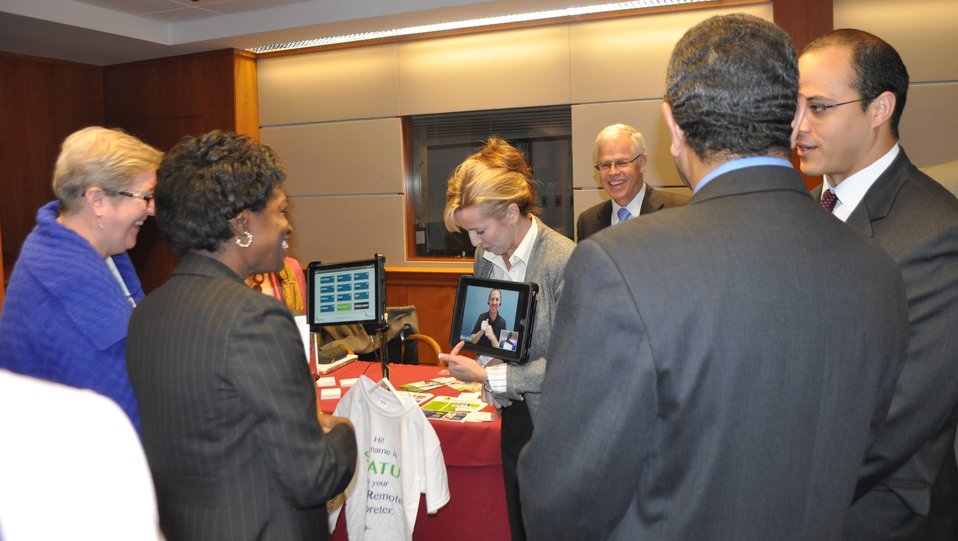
12.6.13 mHealth Innovation Expo

FCC mHealth Innovation Expo.